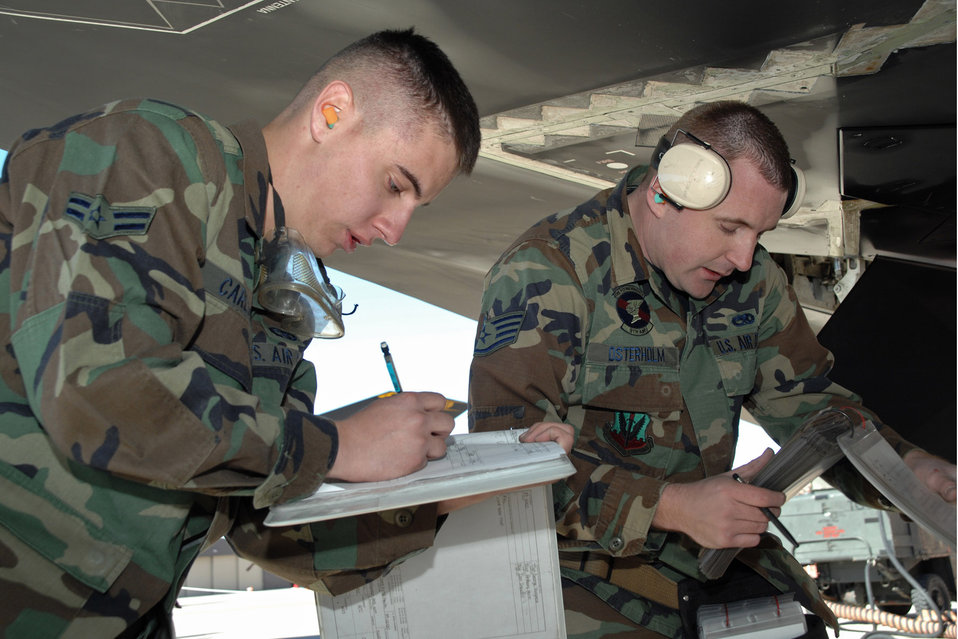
Holloman weapon loaders compete for last time on F-117

Airman 1st Class Corey Colombari and Staff Sgt. Christopher Osterholm complete a checklist during the F-117 Nighthawk Weapons Load Crew of the Year Competition Jan. 18 at Holloman Air Force Base, N.M. The competition is the last of its kind for the F-117. Airman Colombari and Sergeant Osterholm are assigned to the 49th Maintenance Squadron